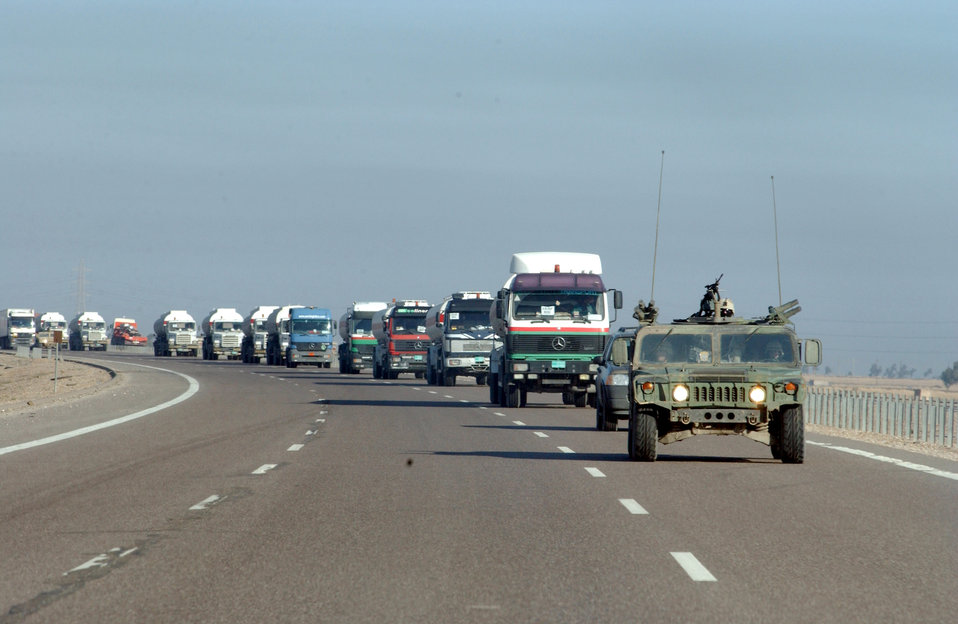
Iraqi Freedom

TALLIL AIR BASE, Iraq -- A convoy of United States Air Force personnel travel to resupply a military base in the area of operation Dec. 29. Most convoys are made by the U.S. Army, but this one consist entirely of Air Force personnel.